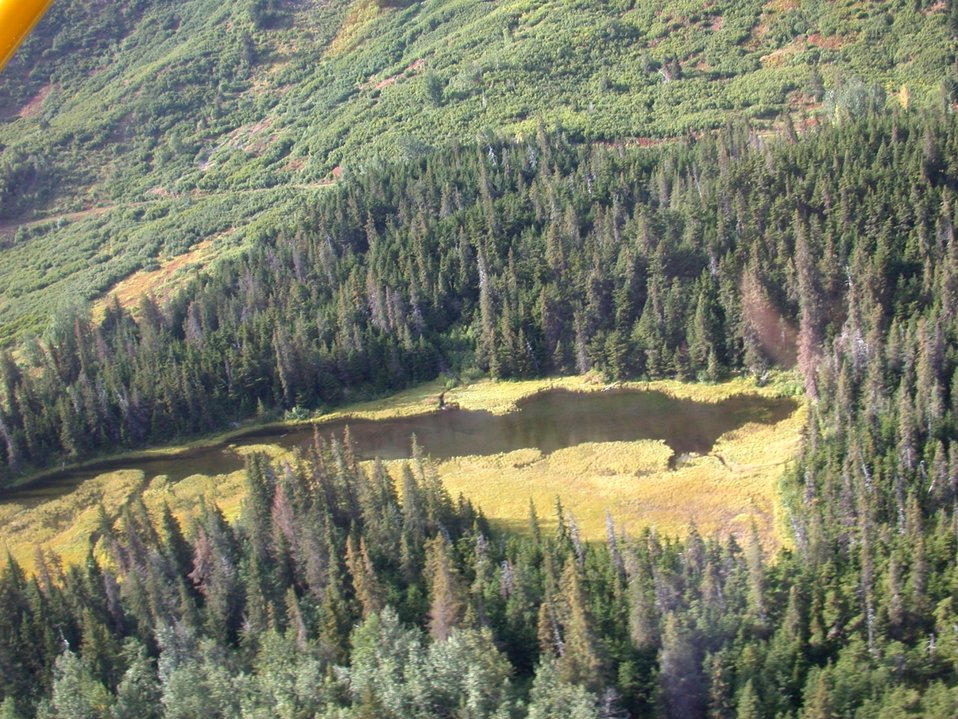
Float plane sightseeing along the Richardson Highway. A small meadow lake.